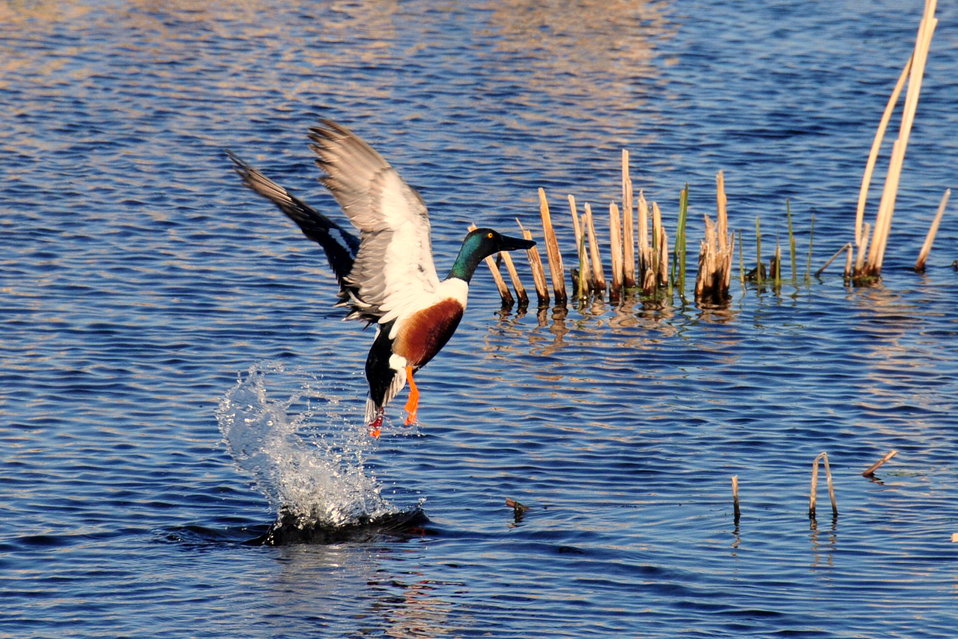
Northern shoveler taking flight Sand Lake National Wildlife Refuge

Northern shovelers take flight at Sand Lake National Wildlife Refuge in South Dakota. Prairie Pothole wetlands are at risk from a number of factors.